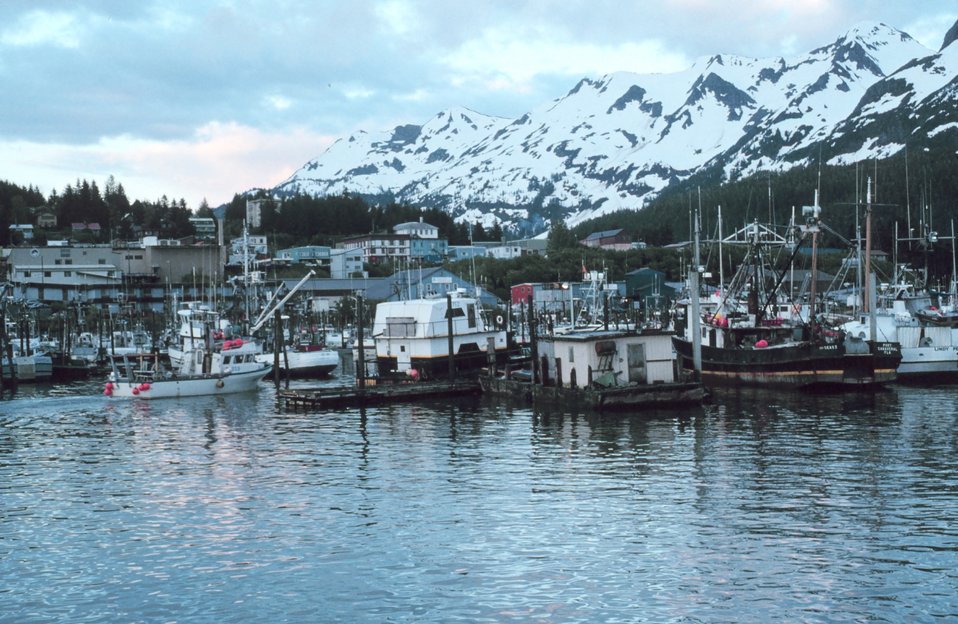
Fishing boats at Cordova